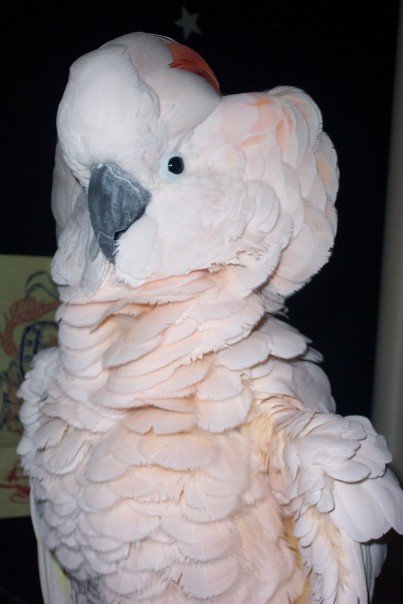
Moluccan cockatoo (Cacatua moluccensis) displaying